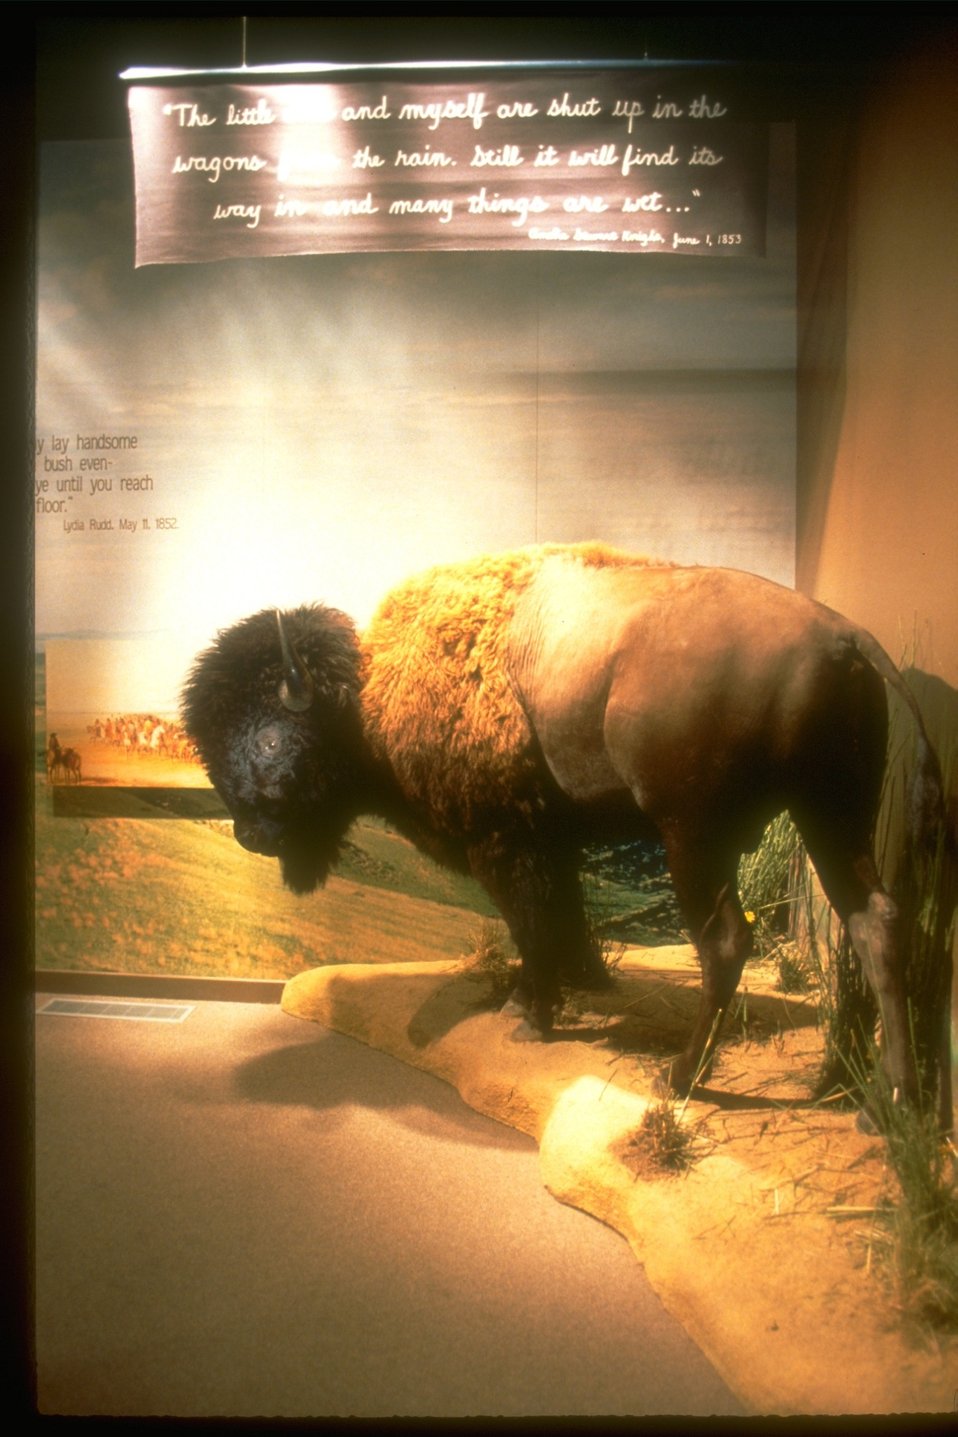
Life size buffalo with bright sun light shining around it in the gallery at the NHOTIC.